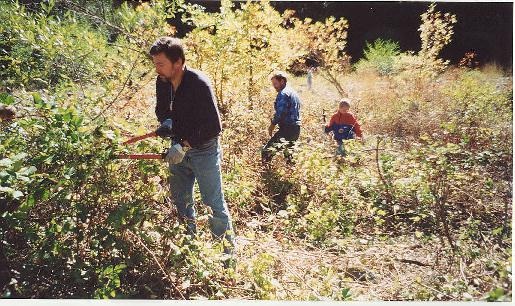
Public Lands Day Dwight Fielder cutting weeds at Clear Creek Recreation site.